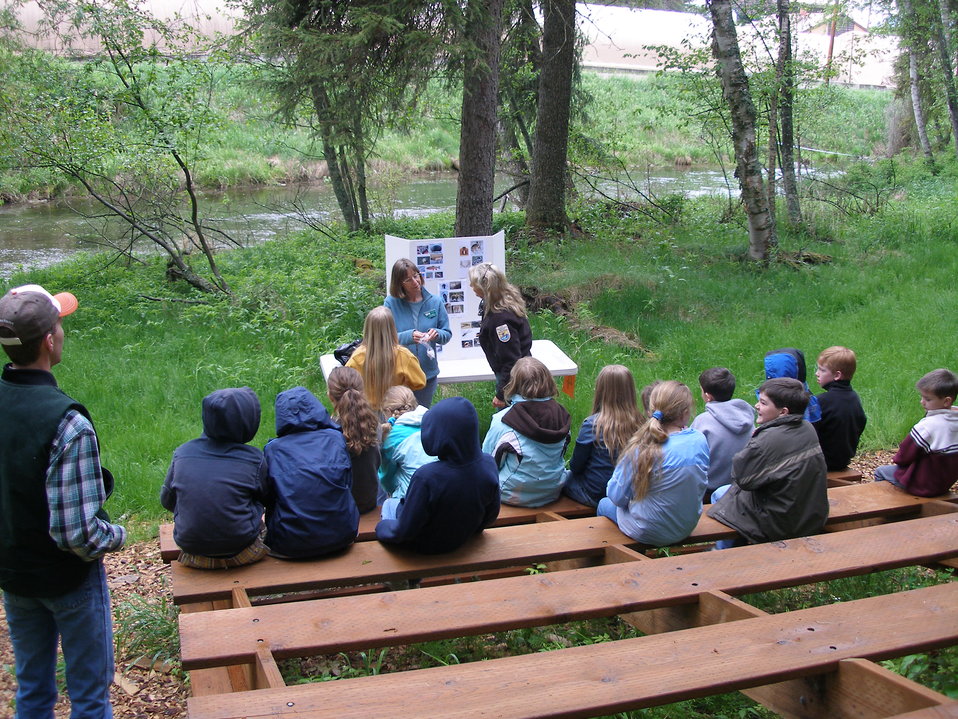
Creston National Fish Hatchery's Amphitheater by Mill Creek

Creston National Fish Hatchery's Nature Trail has thirteen signs along the trail that correspond to a brochure at the trailheads.

For Flathead Valley educators and families, this nature trail helps to increase knowledge of the natural world around us. Informational signs include: Wildflowers not Weeds, Why do Hacheries Raise Fish, Deer Trails - Natures's Highways, Habitats-Aquatic-Forest-Riparian, Protecting Water Quality, Pollinators, Birds - Can you Hear Them Sing?, Historical Land - Jessup, Leave no Trace, Do Insects Bug You?, and the Class Room by the Creek (amphitheater).